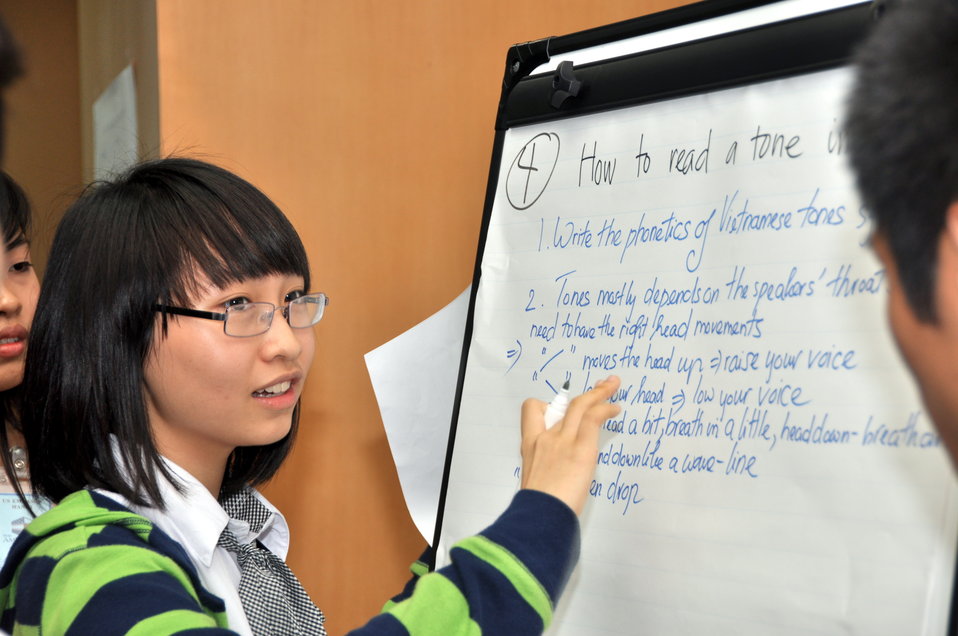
Students join the ‘USAID and Higher Education in Vietnam’ talk

Photo: @USAIDVietnam, November 19, 2012